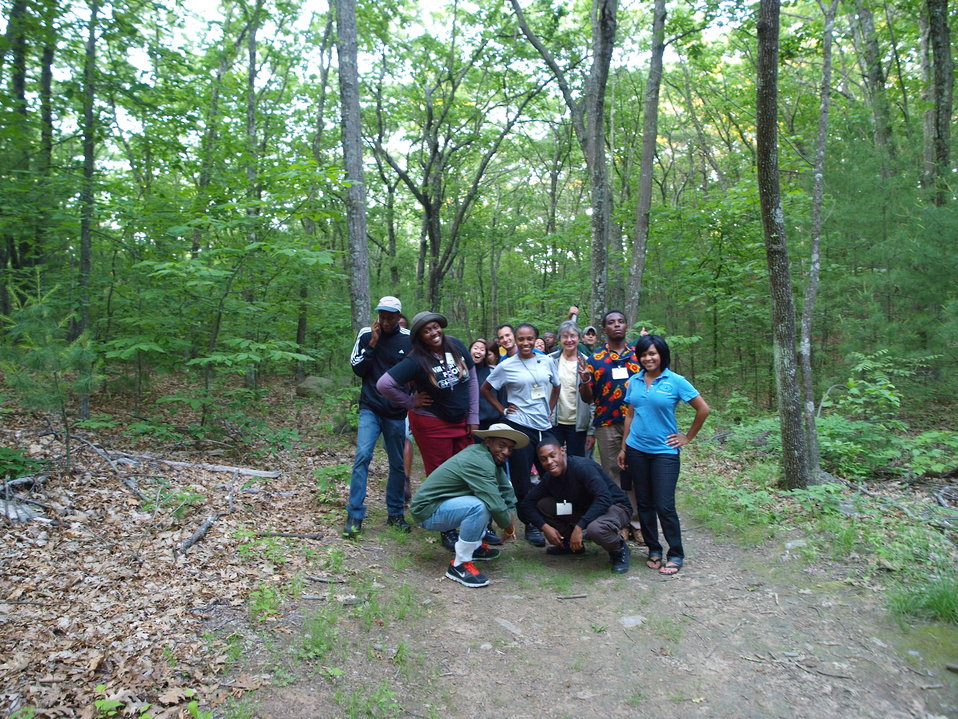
Hiking

Libby and Juancarlos, mixing up with the CDIP crew.